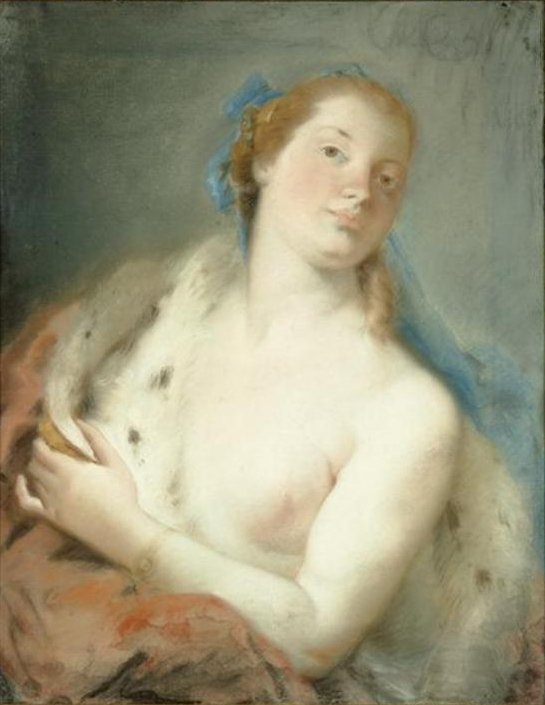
'Allegory of Winter', pastel drawing attributed to Lorenzo Tiepolo, 1762, El Paso Museum of Art